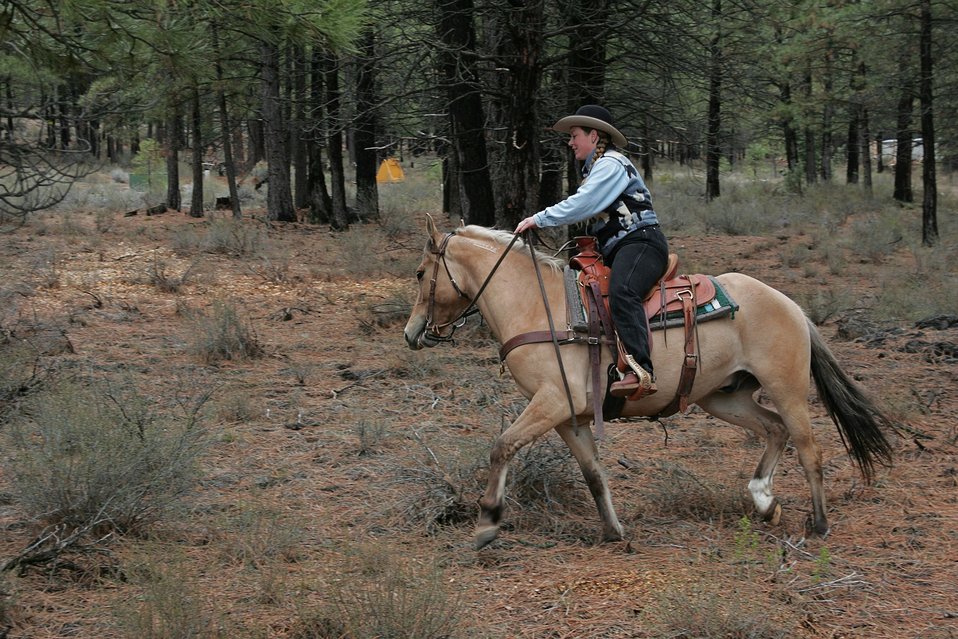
Horse Trainer, Kitty Lauman, works with Spirit a wild mustang from the Kiger Wild Horse Herd Management Area in eastern Oregon.